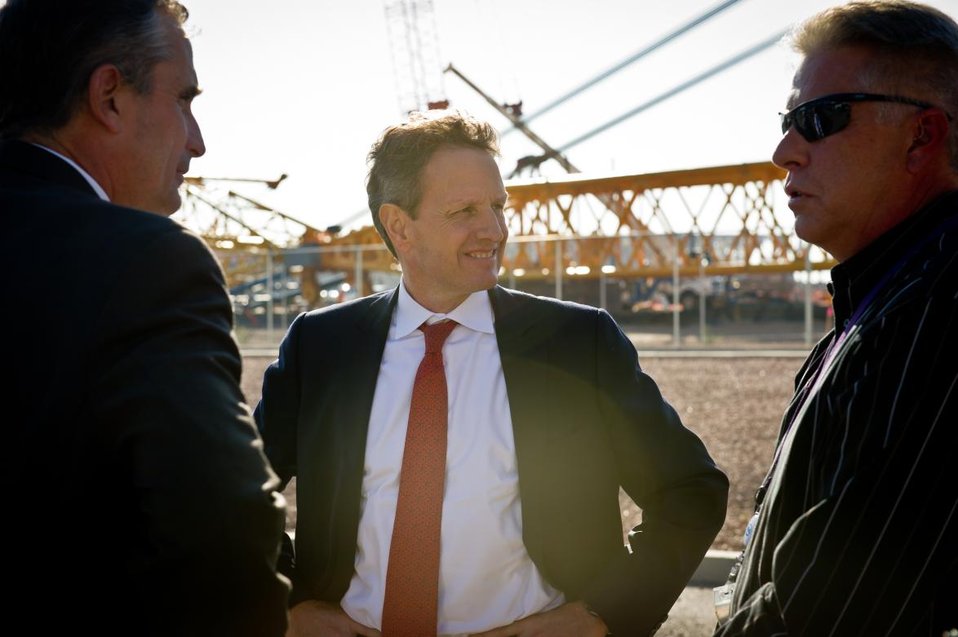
Treasury Secretary Geithner Tours Intel Facilities in Arizona

Treasury Secretary Tim Geithner met with Intel employees and toured the construction site of the company’s new manufacturing facility in Chandler, Arizona. The $5 billion expansion of Intel’s Arizona campus will significantly increase its domestic manufacturing capacity, and the construction of Fab 42 – the most advanced, high-volume semiconductor manufacturing facility in the world – will create thousands of construction and permanent manufacturing jobs in Arizona.